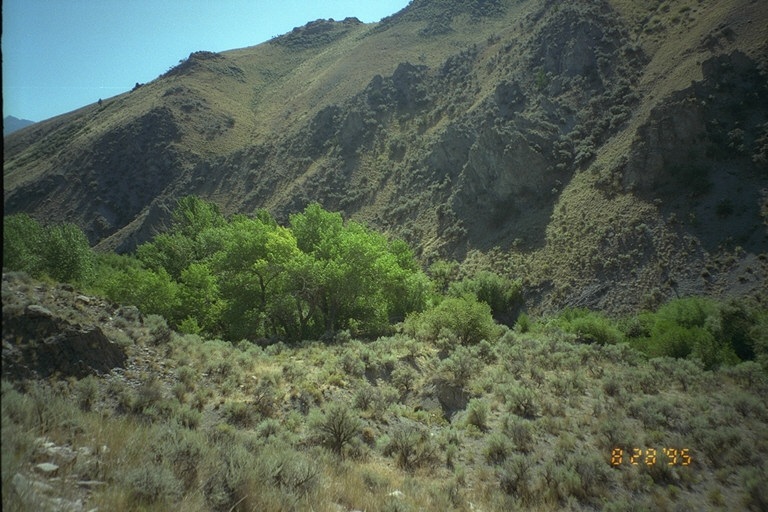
Riparian area Public Lands Salmon Field Office UCSC Upper Columbia Salmon Clearwater District